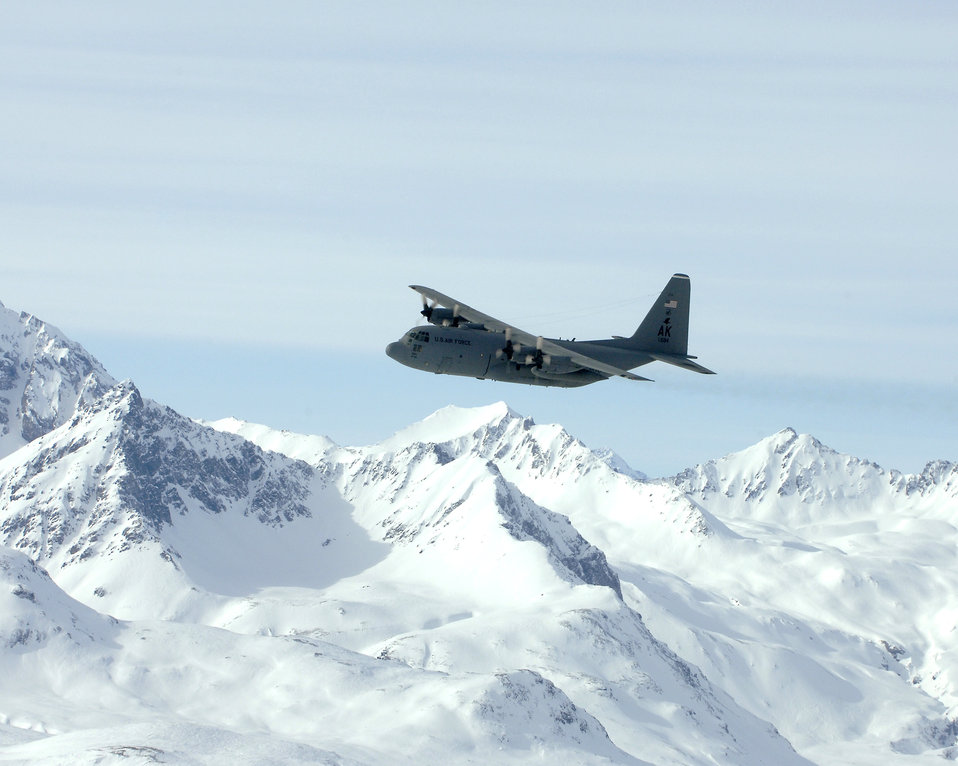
C-130s leaving Alaska

A C-130 Hercules from the 517th Airlift Squadron at Elmendorf Air Force Base, Alaska, flies over the Alaska Range during its final flight March 23. After 43 years of continuous service in Alaska, the flight marked the end of the C-130 era at the 517th. Airmen at Elmendorf soon will see C-17 Globemaster IIIs taking over the airlift mission.